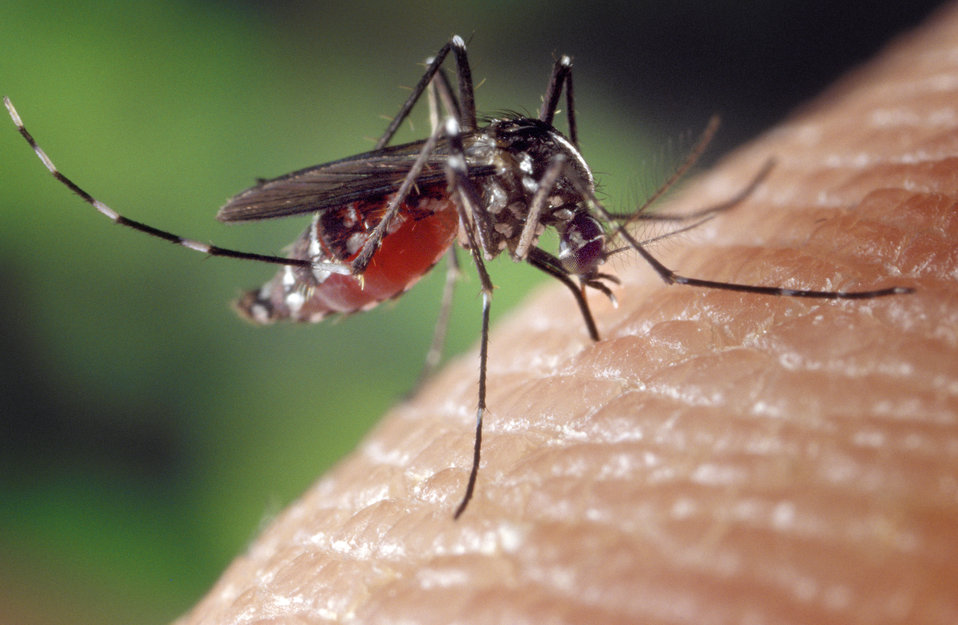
A blood-engorged female Aedes albopictus mosquito feeding on a human host.